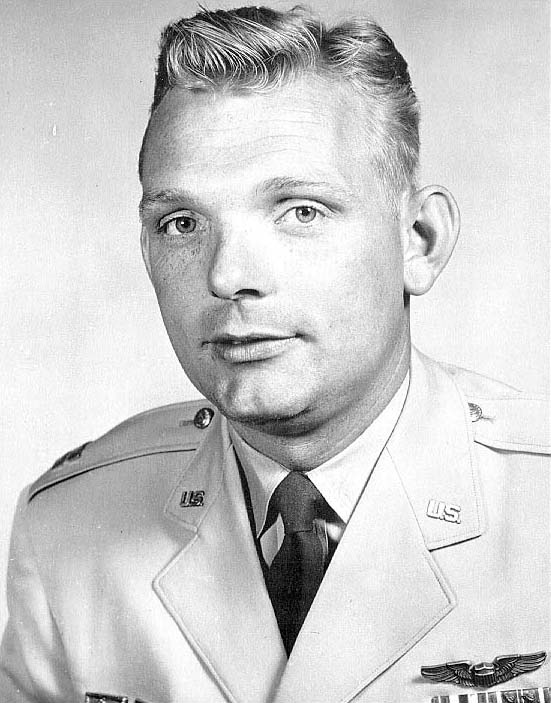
Captain Iven C. Kincheloe Jr.

1950's -- Captain Iven C. Kincheloe Jr. in his service dress uniform. Kincheloe, the personification of the